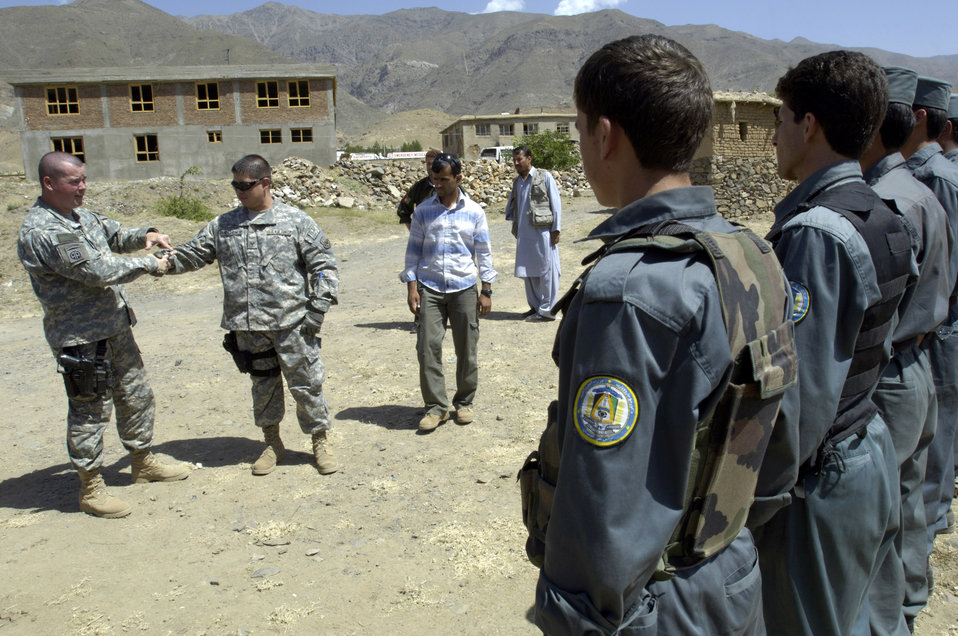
Operation Enduring Freedom (OEF)

Tech. Sgt. Michael Downey (left) and Staff Sgt. Andre Sanchez-Romero demonstrate how to escape from a wrist lock to members of the Afghan National Police Aug. 6. The security forces Airmen, members of the Panjshir Provincial Reconstruction Team, traveled with other PRT members to the Anaba district of Panjshir Province, Afghanistan, to provide training to the ANP working in the district. Sergeant Downey is deployed from the Pentagon, Washington, D.C. Sergeant Sanchez-Romero is deployed from Minot Air Force Base, N.D.